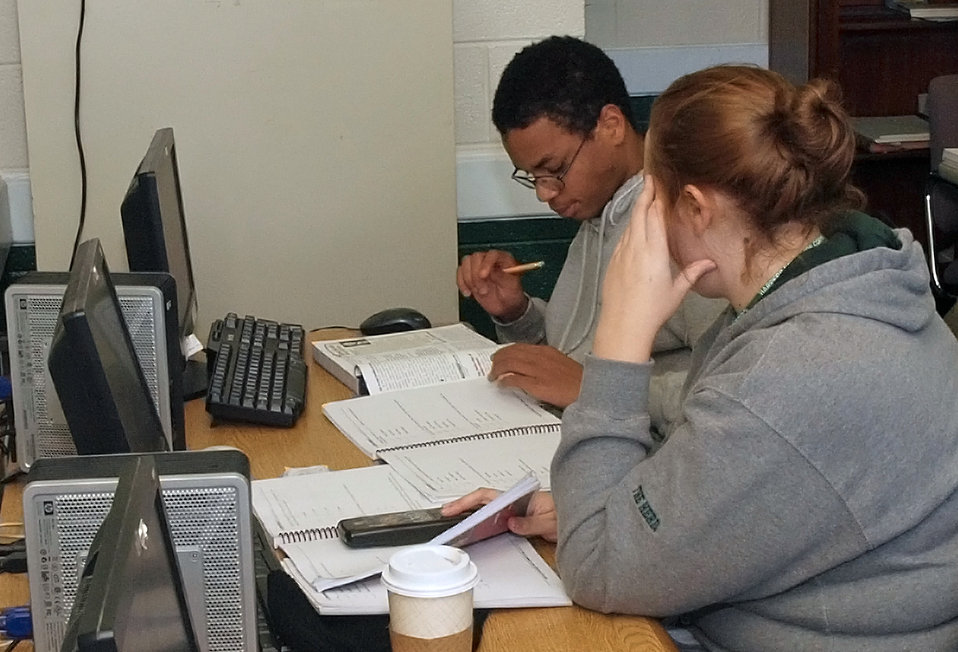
Shepard University instructor and student Kevon Specer study at the Job Civilian Conservation Corp Center (JCCCC) in Harpers Ferry, WV on Nov. 8, 2012. The U.S. Forest Service manages 28 Job Corps Civilian Conservation Centers.